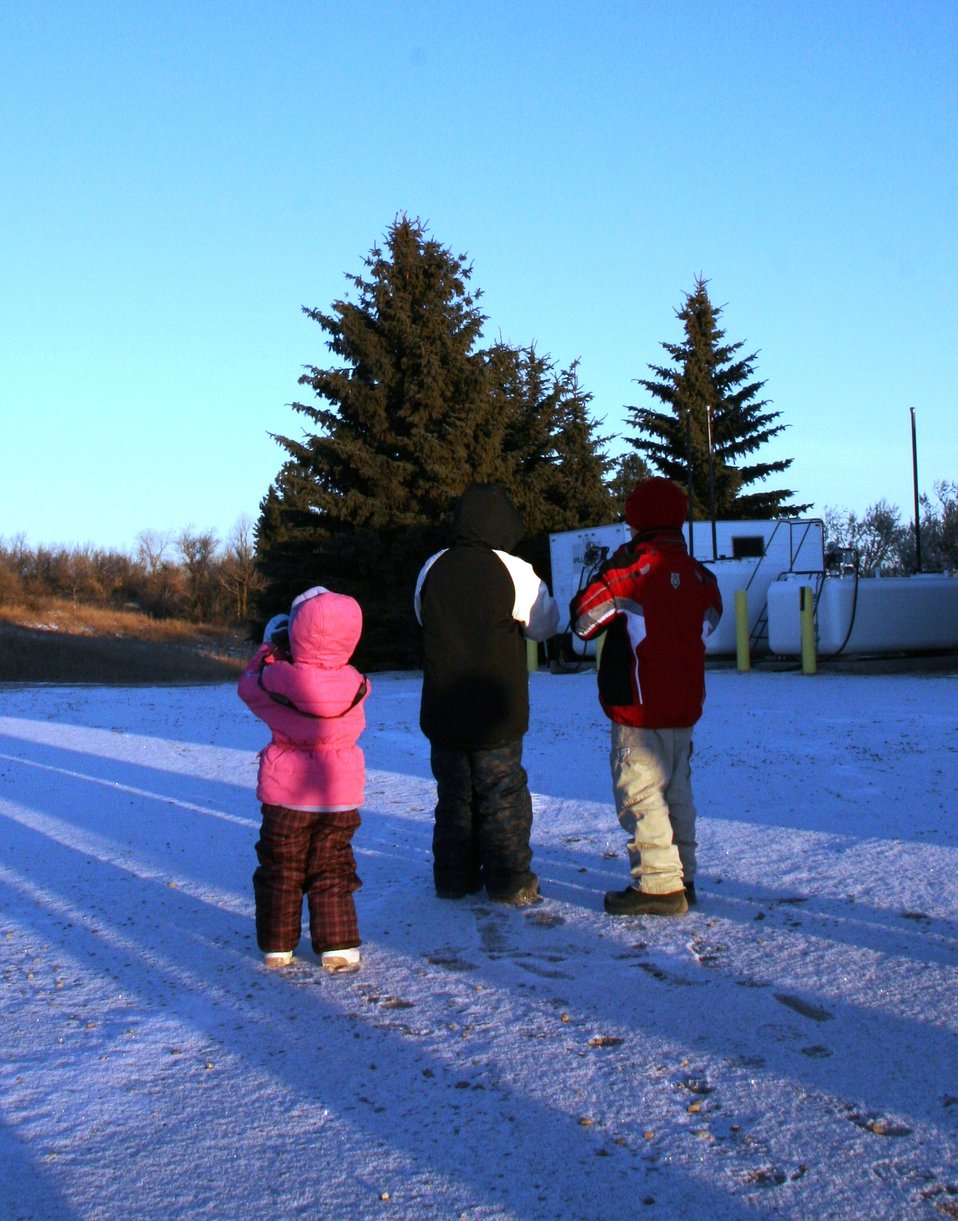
Four Common Redpolls Spotted

Checking out the four common redpolls on the very tip top of the evergreen tree